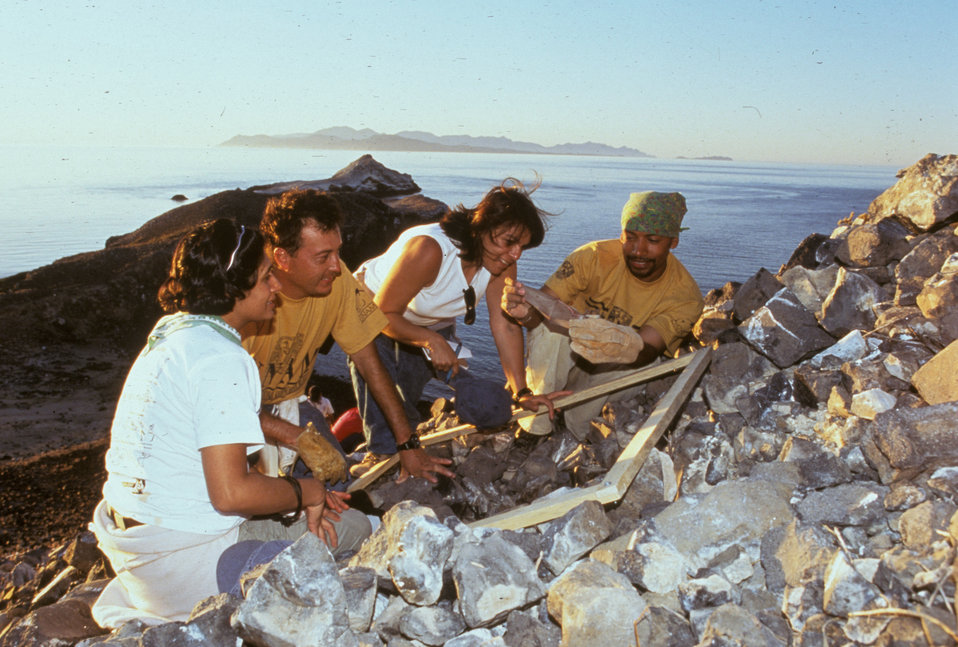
Fishing bat research